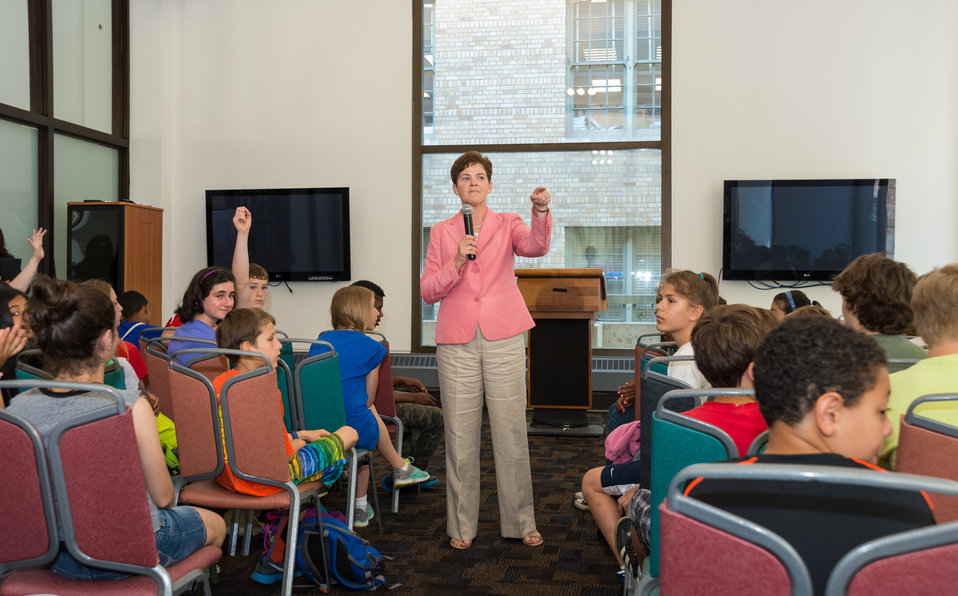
Agriculture Deputy Secretary Krysta Harden speaking with students from the Alice Deal Middle School, Washington, DC students during their visit to the United States Department of Agriculture (USDA) in Washington, DC, Wed. Jun. 4, 2014. The students studied hunger, food security, how to prevent hunger and organizations involved in solving hunger situations nationally and worldwide. A lot of what they learned is administered through the USDA.